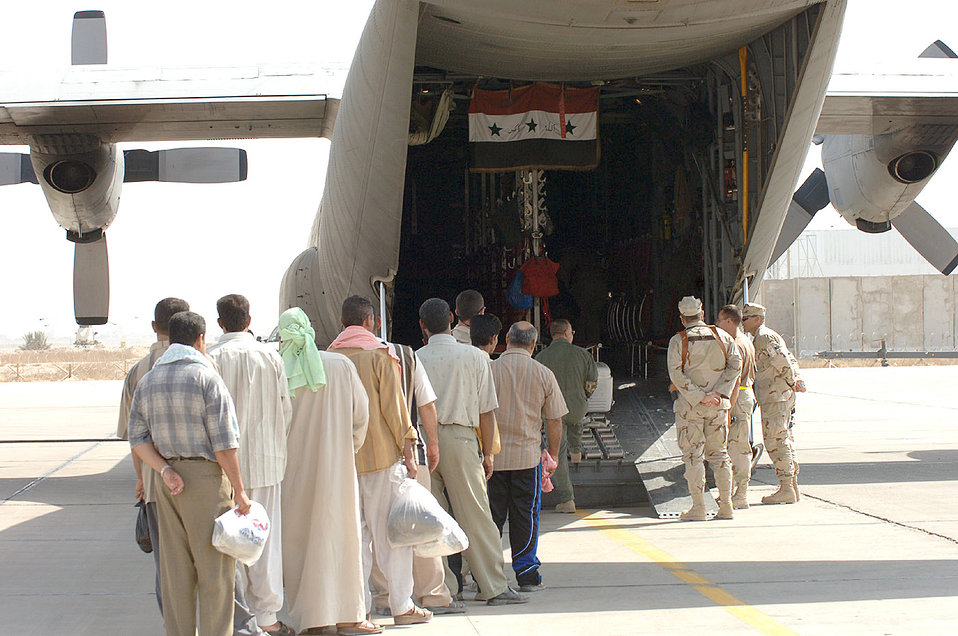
Voting time

SATHER AIR BASE, Iraq -- Iraqi poll workers board an Iraqi Air Force C-130 here. The aircraft took the worker to polling stations around the country.